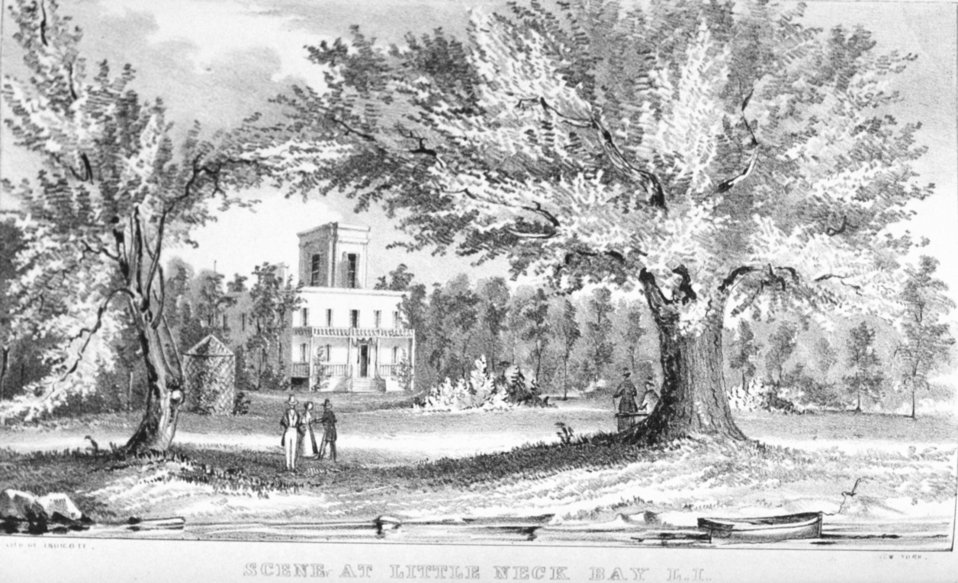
Scene at Little Neck Bay, Long Island.